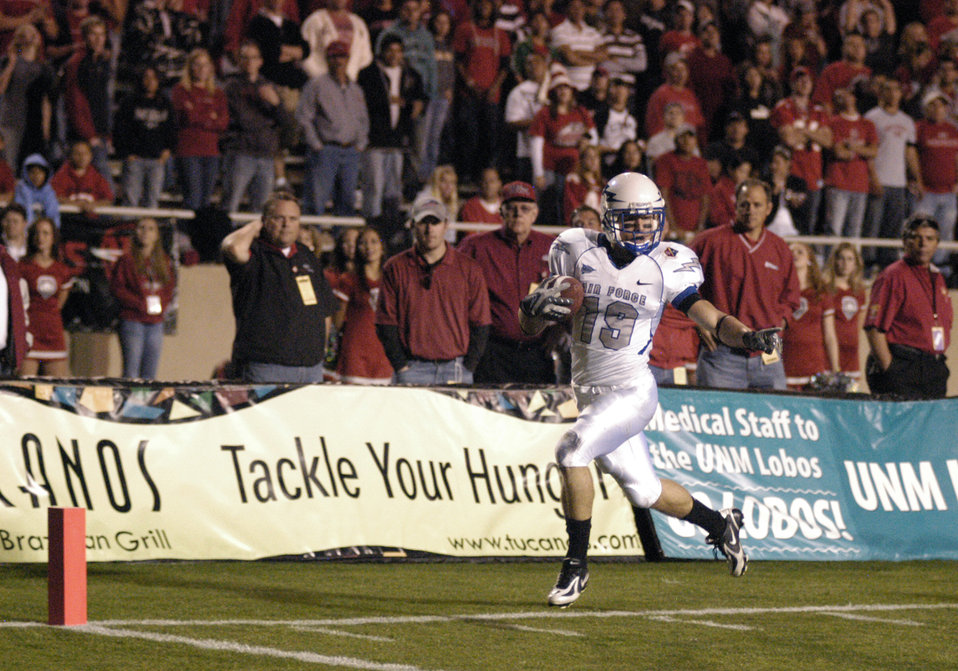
Falcons self destruct in 34-31 loss

Falcon wide receiver Ty Paffett sprints for a 21-yard end around touchdown in the second quarter of Air Force's 34-31 loss to New Mexico Oct. 25 at University Stadium in Albuquerque. The Falcons ran 49 times for 212 yards on the ground.